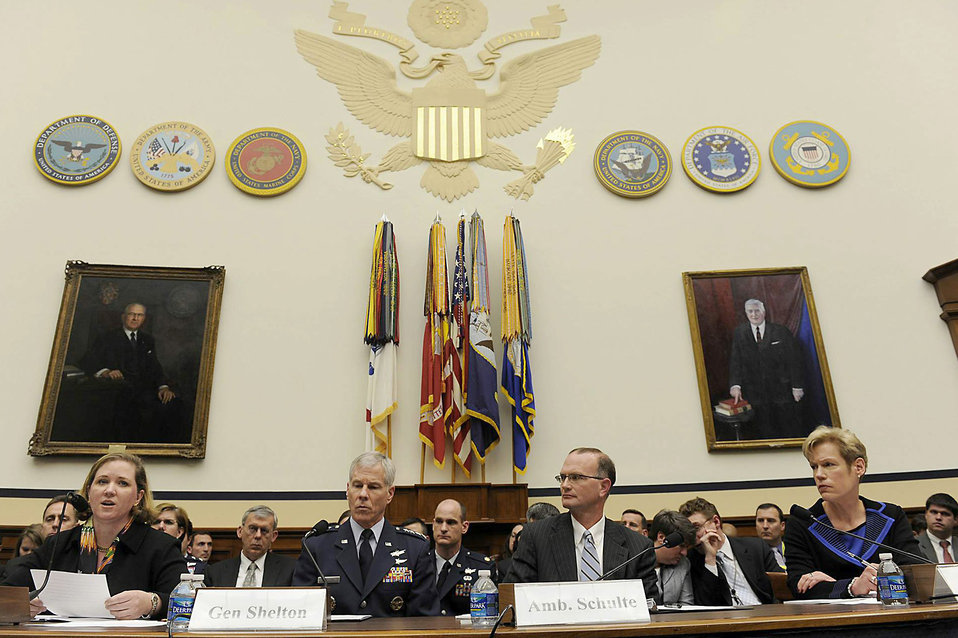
Air Force officials take space budget, acquisition strategy to Capitol Hill

Air Force and Department of Defense leaders testify before the Strategic Forces Subcommittee of the House Armed Services Committee March 15, 2011, in Washington, D.C. (From left) Erin Conaton, the Under Secretary of the Air Force; Gen. William Shelton, the Air Force Space Command commander; Ambassador Gregory Schulte, the deputy secretary of defense for Space Policy; and Betty Sapp, the National Reconnaissance Office principal deputy director, briefed the subcommittee and answered questions regarding
national security space activities associated with the Fiscal 2012 national defense authorization budget request. Rep. Mike Turner chaired the subcommittee.